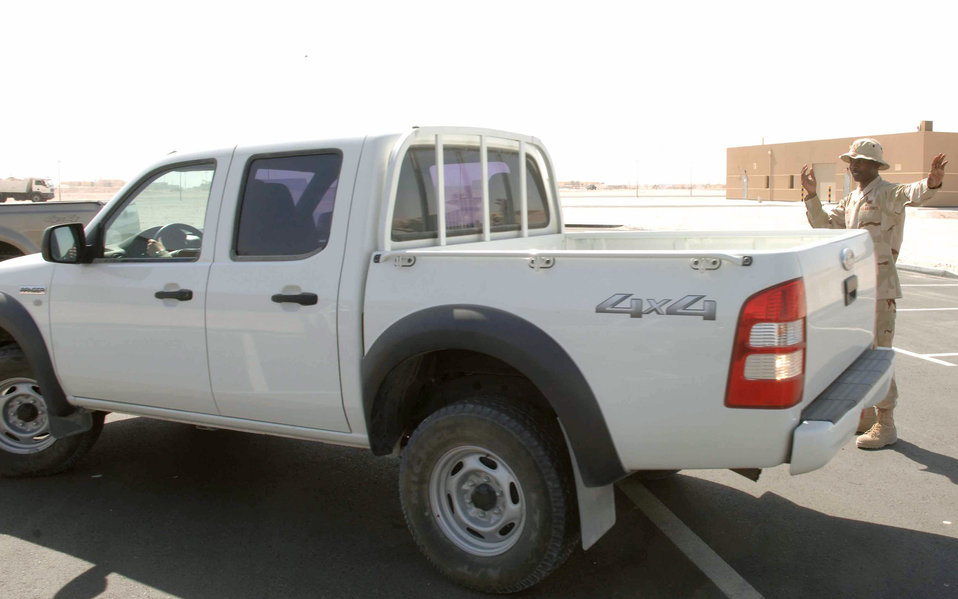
101 Critical Days of Summer - 365 days a year

Airman 1st Class Keon Nicholas acts as a spoter June 13 for a driver backing out of the 379th Expeditionary Wing Operations Center parking lot June 13 in Southwest Asia. Unit safety representatives are assigned to each unit to ensure the safety of base members and are responsible for maintaining safety checklists in each office. Airman Nicholas is the 379th Expeditionary Operations Support Squadron information manager and unit safety representative.